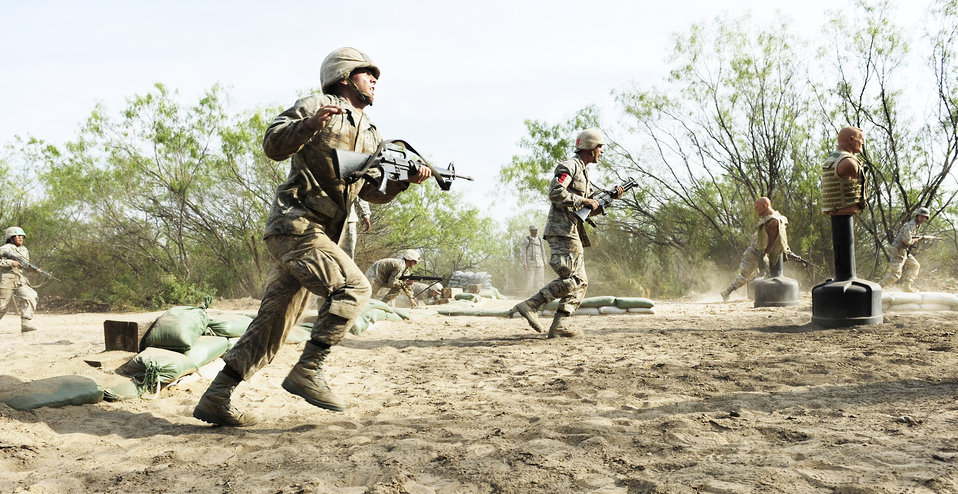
Trainees conquer the BEAST

Basic trainees run through a tactical course at the Basic Expeditionary Airman Training, or BEAST, course Sept. 2, 2009, at Lackland Air Force Base, Texas. The BEAST introduces Airmen to the joint expeditionary concept and immerses them in deployment scenarios.